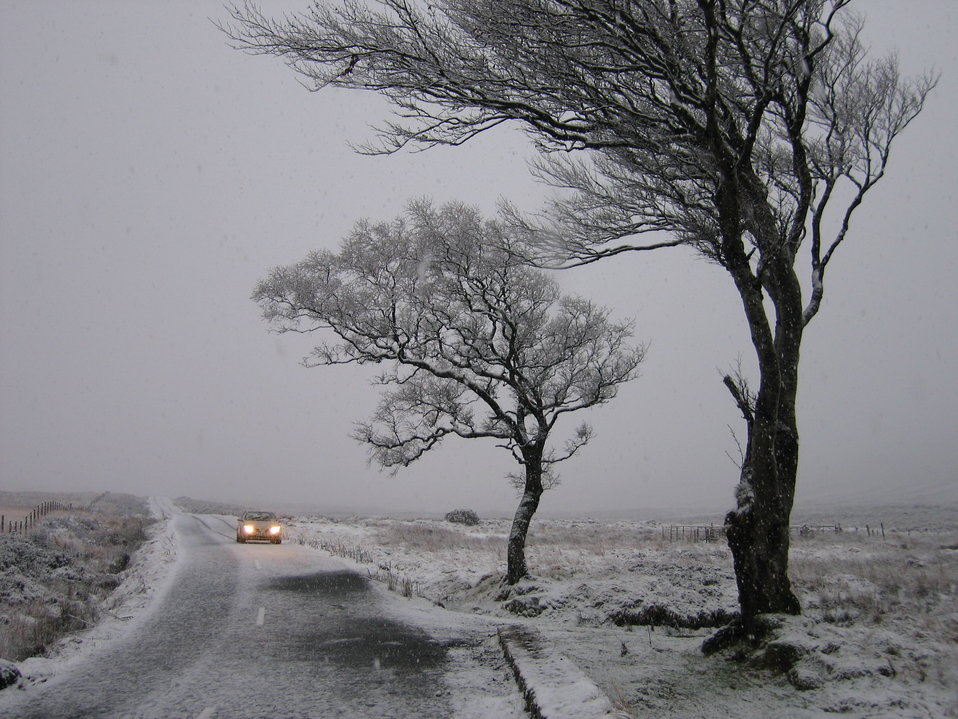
R759 in West Wicklow at a point where it crosses the River Liffey, Ireland.